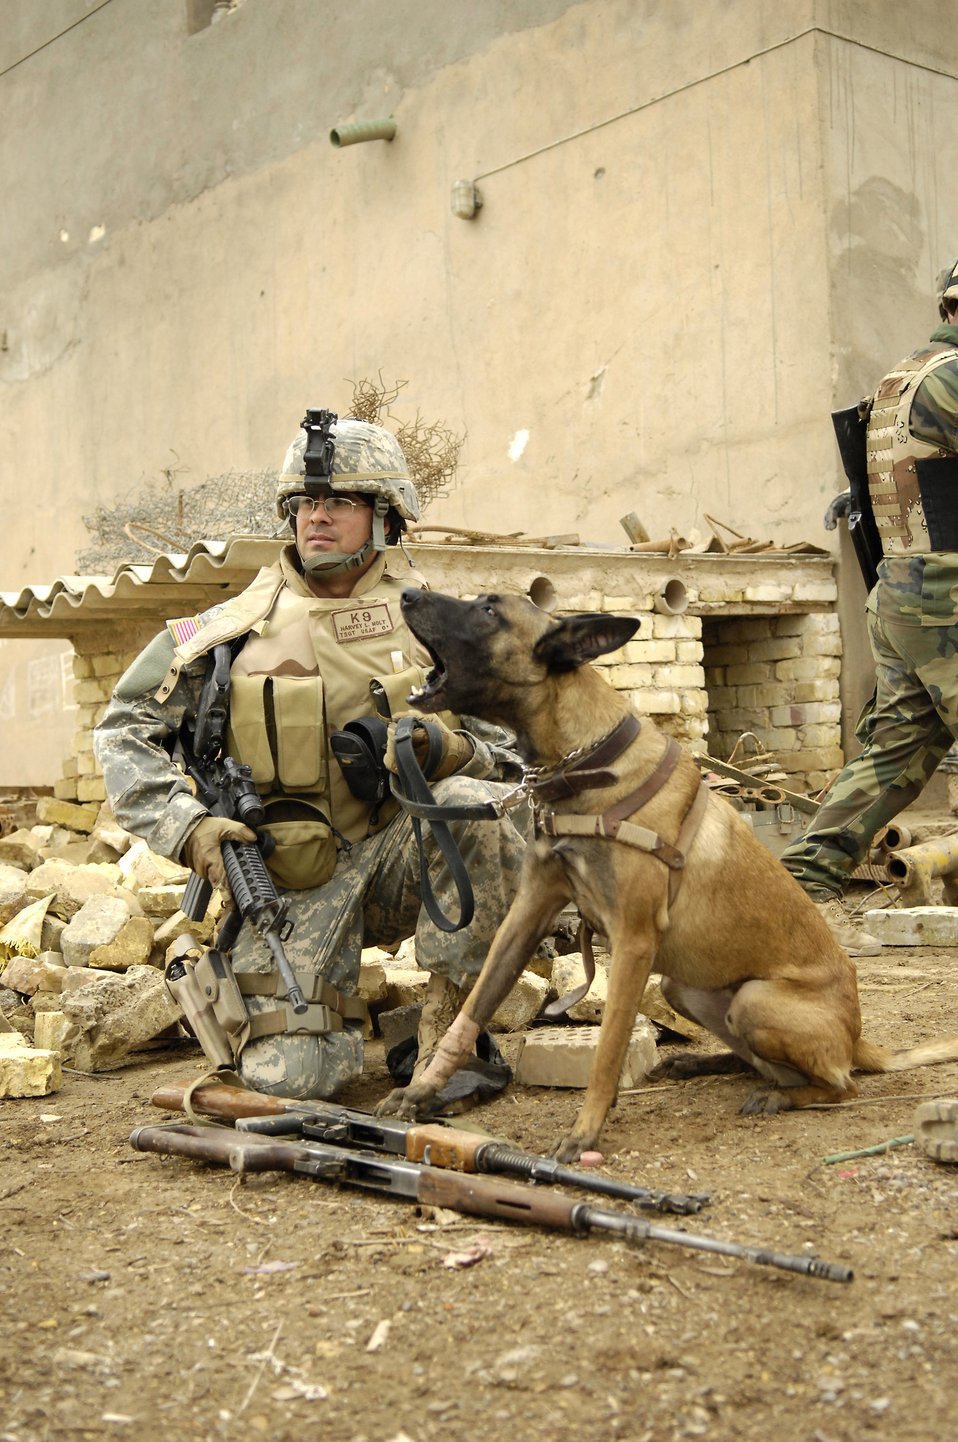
Airmen excel in nontraditional combat roles

Tech. Sgt. Harvey Holt and his military working dog take a short break Feb. 6 during a patrol in Kahn Bani Sahd, Iraq, with U.S. and Iraqi soldiers. Airmen continue to excel in nontraditional combat roles in support of combatant commanders' requirements where Airmen are deployed to assist Soldiers. Sergeant Holt is assigned to the 732nd Expeditionary Security Forces Squadron.